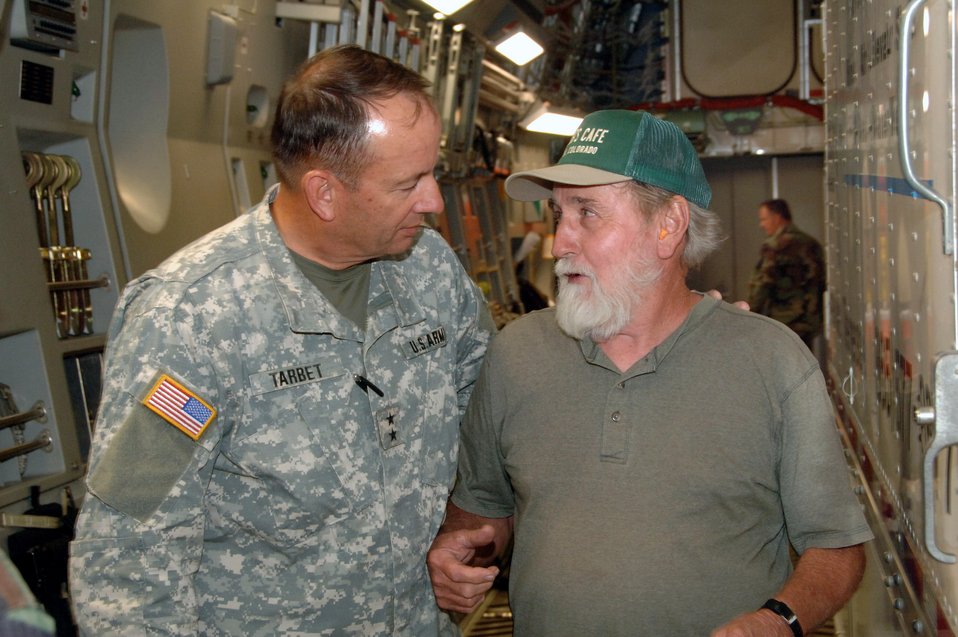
Air National Guard assists with Utah mining rescue

Army Maj. Gen. Brian Tarbet welcomes George Rollins to Salt Lake Aug. 9 after Mr. Rollins drove across the country to deliver a critical piece of equipment to rescuers of six Utah miners. The equipment will allow rescuers the ability to position a camera in the mine and assess the situation from a 360-degree angle. It will allow rescue crews to have a better idea of conditions inside the collasped mine. General Tarbet is the adjutant general of Utah.